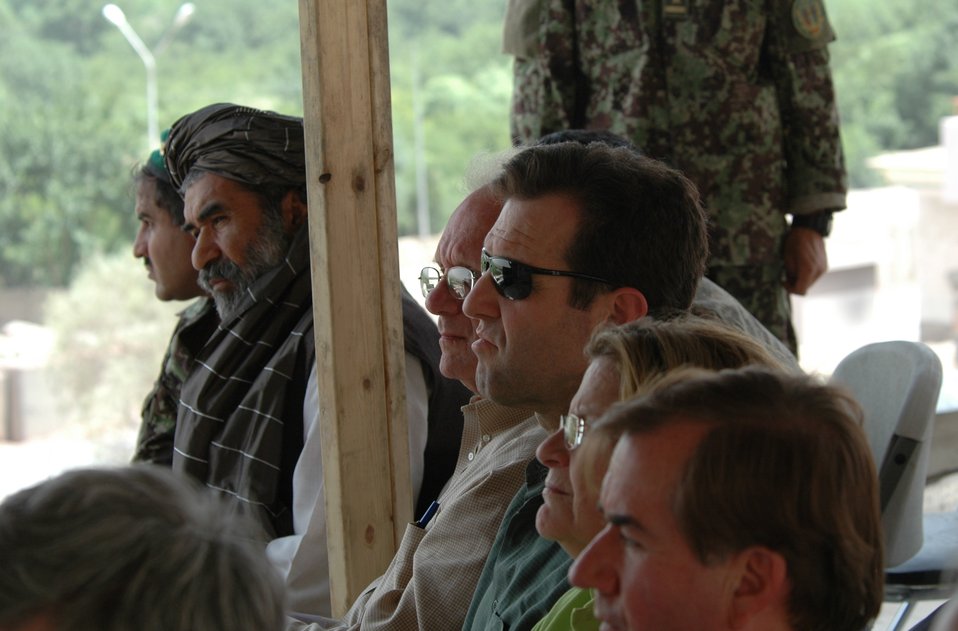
CODEL Berman